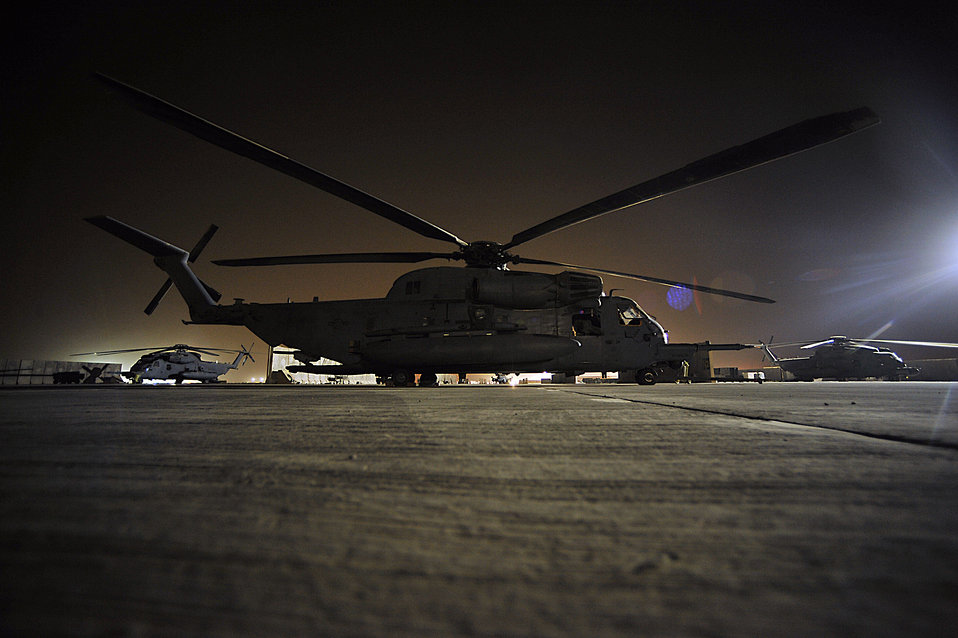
MH-53s fly final combat missions

MH-53 Pave Lows from the 20th Expeditionary Special Operations Squadron sit on the tarmac prior to the last combat mission of the helicopters Sept. 27 in Iraq. The MH-53 is retiring after nearly 40 years of service to the Air Force.